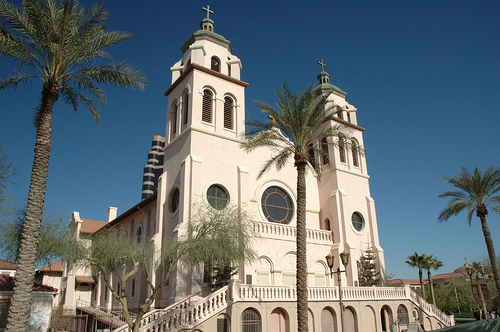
Saint Mary's Basilica on the corner of 3rd Street and Brazos in downtown Phoenix, AZ.